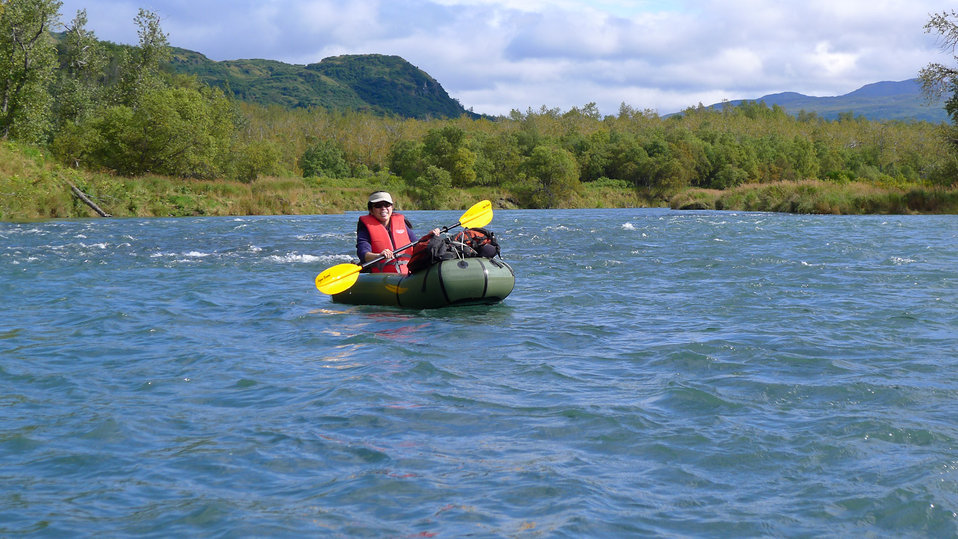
Volunteering at Uganik

Lisa Hupp/USFWS
Source: Kodiak NWR
Volunteers often assist our park rangers during the September Public Use Survey.